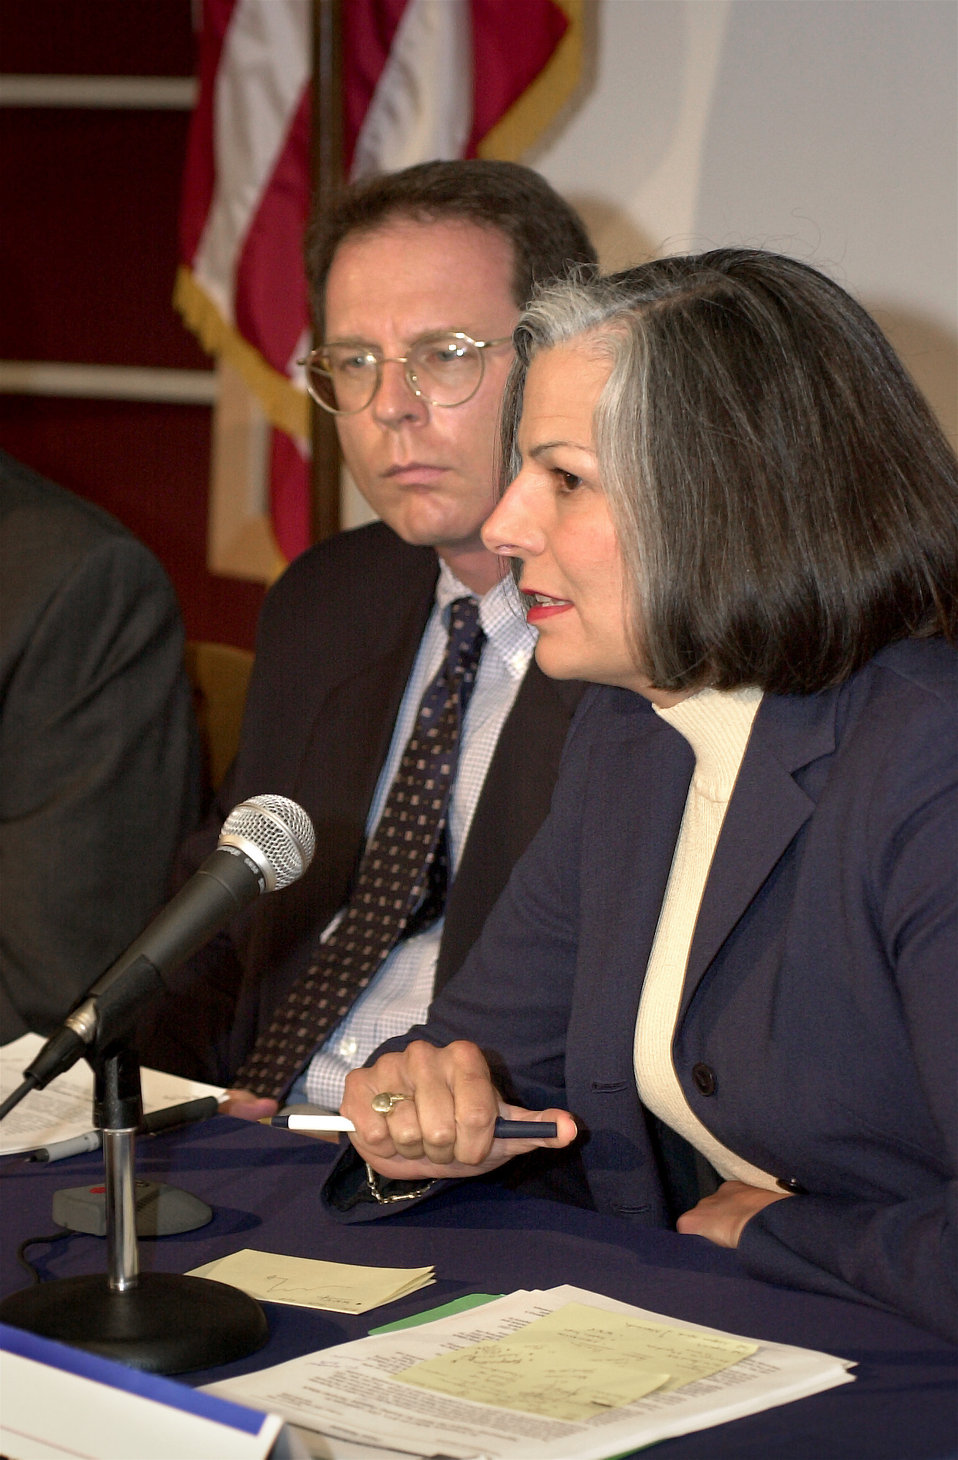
Centers for Disease Control and Prevention Bioterrorism Preparedness Press Briefing, August 27, 2002.